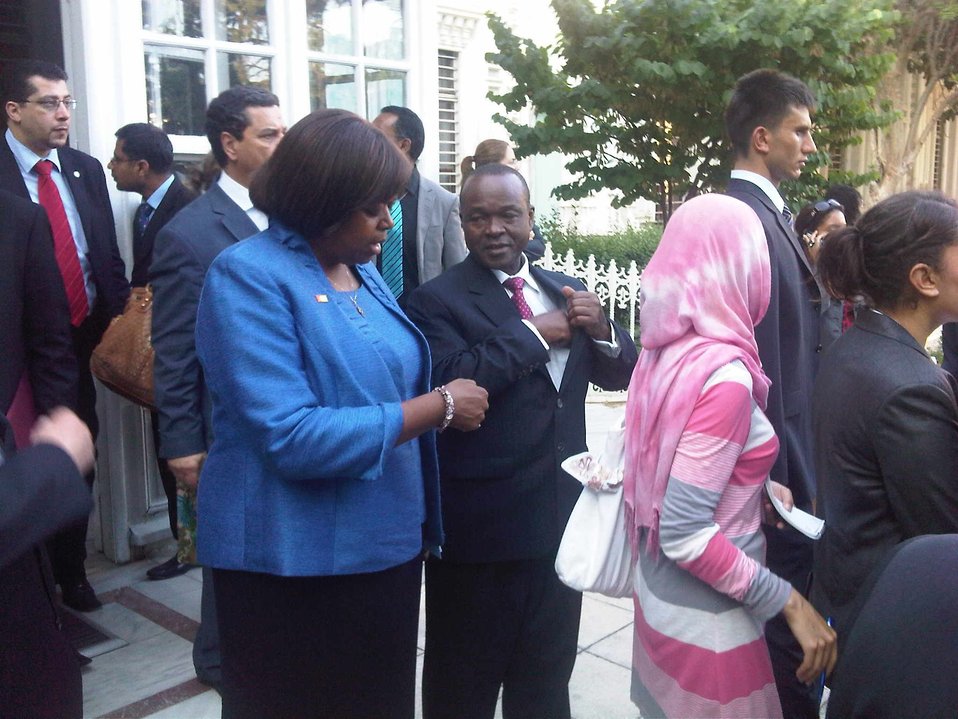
Ambassador Suzan Cook Talks With Organization of the Islamic Conference (OIC)

Suzan Johnson Cook Ambassador-At-Large for International Religious Freedom talks after a meeting with the Organization of the Islamic Conference (OIC) in Istanbul, Turkey, on July 15, 2011. State Department photo/ Public Domain]